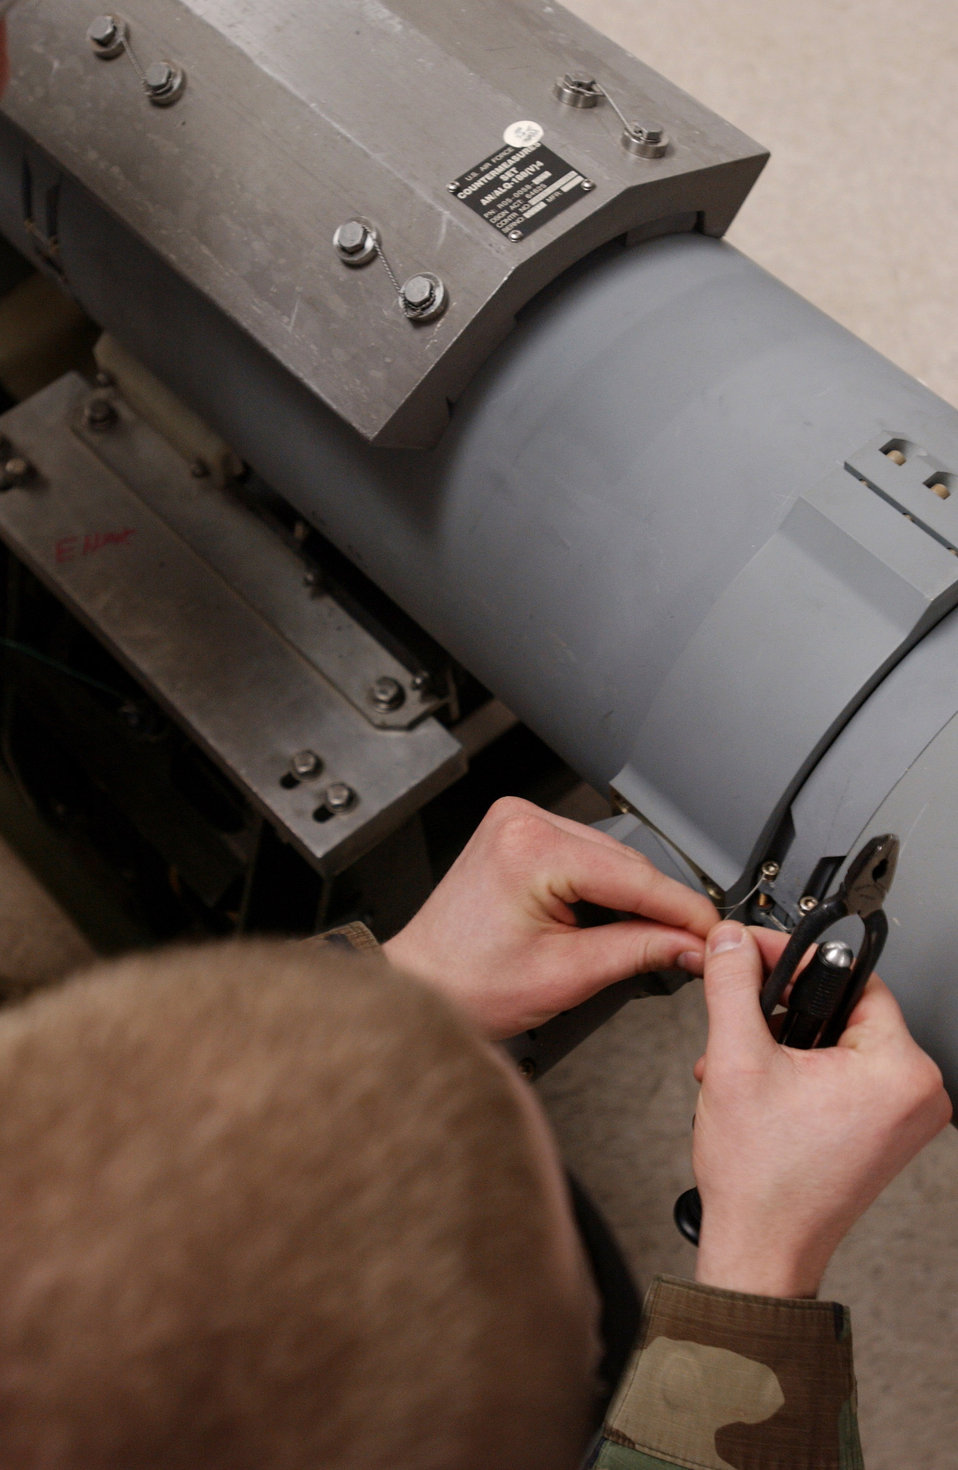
Electronic attack pod increases lethality

Airman 1st Class Timothy Ogburn replaces a safety wire on an electronic attack pod Feb. 27 in the Avionics Flight at Eielson Air Force Base, Alaska. The 354th Fighter Wing aggressor aircraft incorporate the EA pods in training to degrade an enemy pilot's radar, forcing the pilot to rely on their own sight. Airman Ogburn is an electronic warfare journeyman assigned to the 354th Maintenance Squadron.